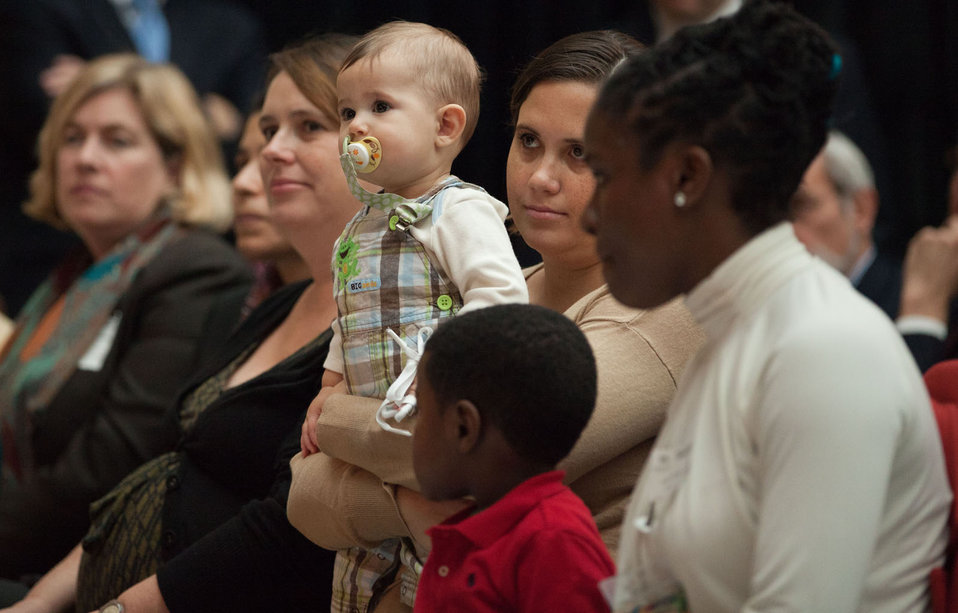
December 12, 2011 New Mercury and Air Toxics (MATs) Standards will greater protect the health of children

The Mercury and Air Toxics Standards rules is a great victory for public health -- especially for the health of children.

The standards will help prevent 130,000 cases of childhood asthma symptoms and about 6,300 fewer cases of acute bronchitis a month children each year.

Administrator Jackson addressed a gathering of public health experts, representatives from industry, and families and children at the Mercury and Air Toxics event in Washington, D.C. at the Children's National Medical Center -- Children's Research Institute Atrium.